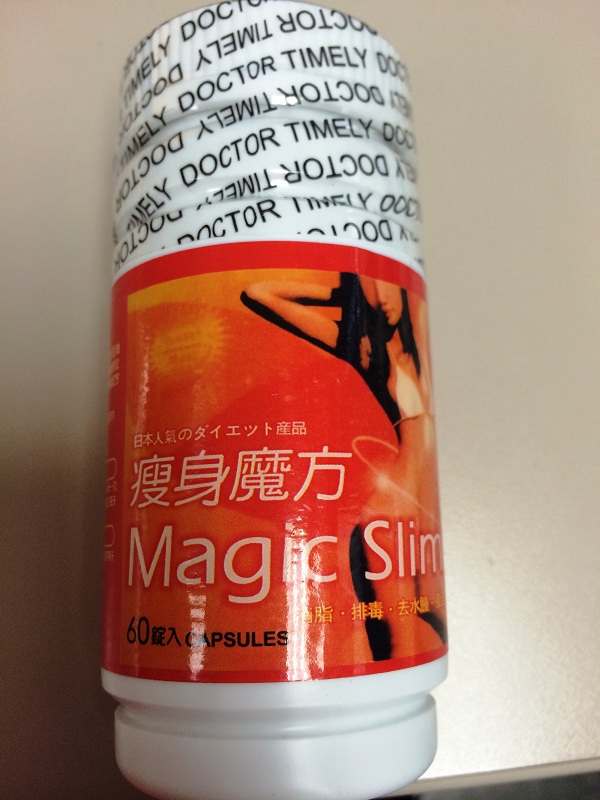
RECALLED - Reduce Weight Fruta Planta

February 4, 2014 – Product Recall – MyNicKnaxs, LLC. Issues a Voluntary Nationwide and International Recall of All Weight Loss Formulas of Reduce Weight Fruta Planta.